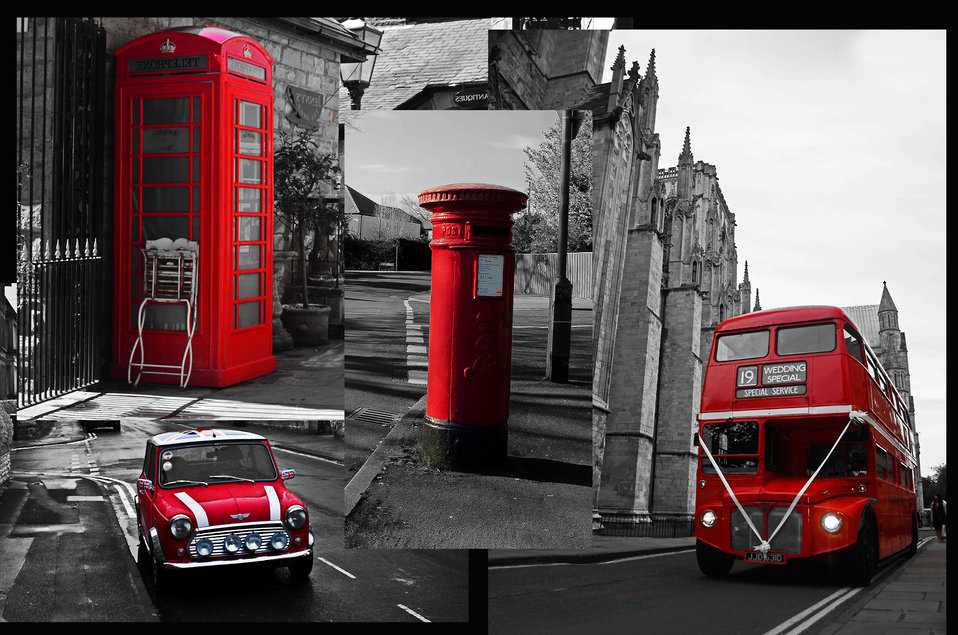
Symbols the united kingdom.